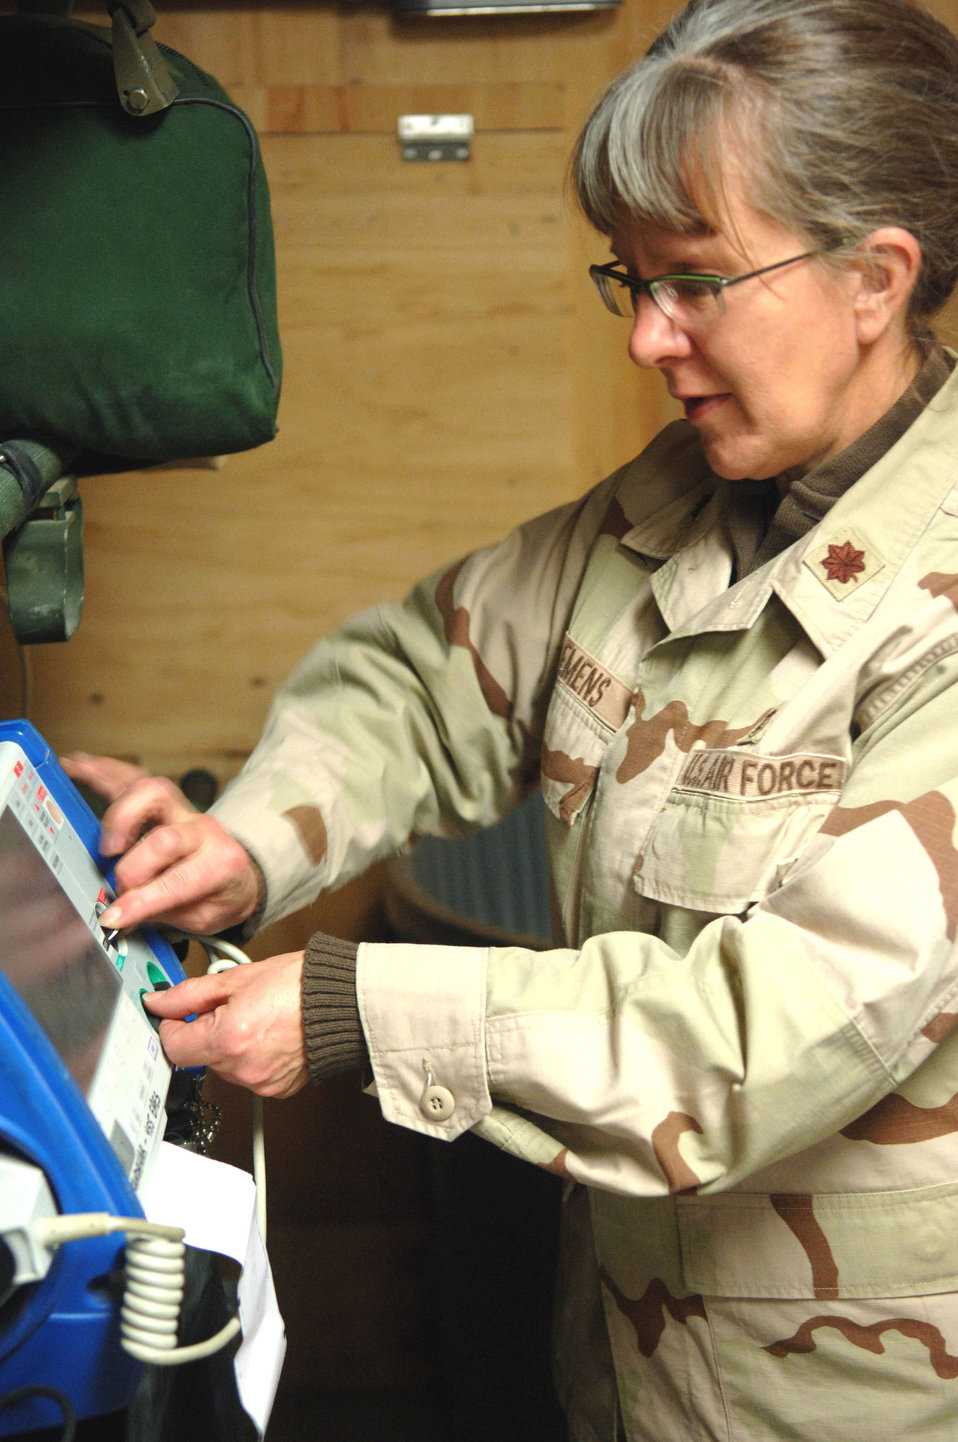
Serving through the season: Maj. Joni Clemens

Maj. Joni Clemens is a flight nurse assigned to the 455th Aeromedical Evacuation Flight at Bagram Air Base, Afghanistan. The Sioux City, Iowa, native has been a nurse for 15 years and is deployed to the theater from Pope Air Force Base, N.C.